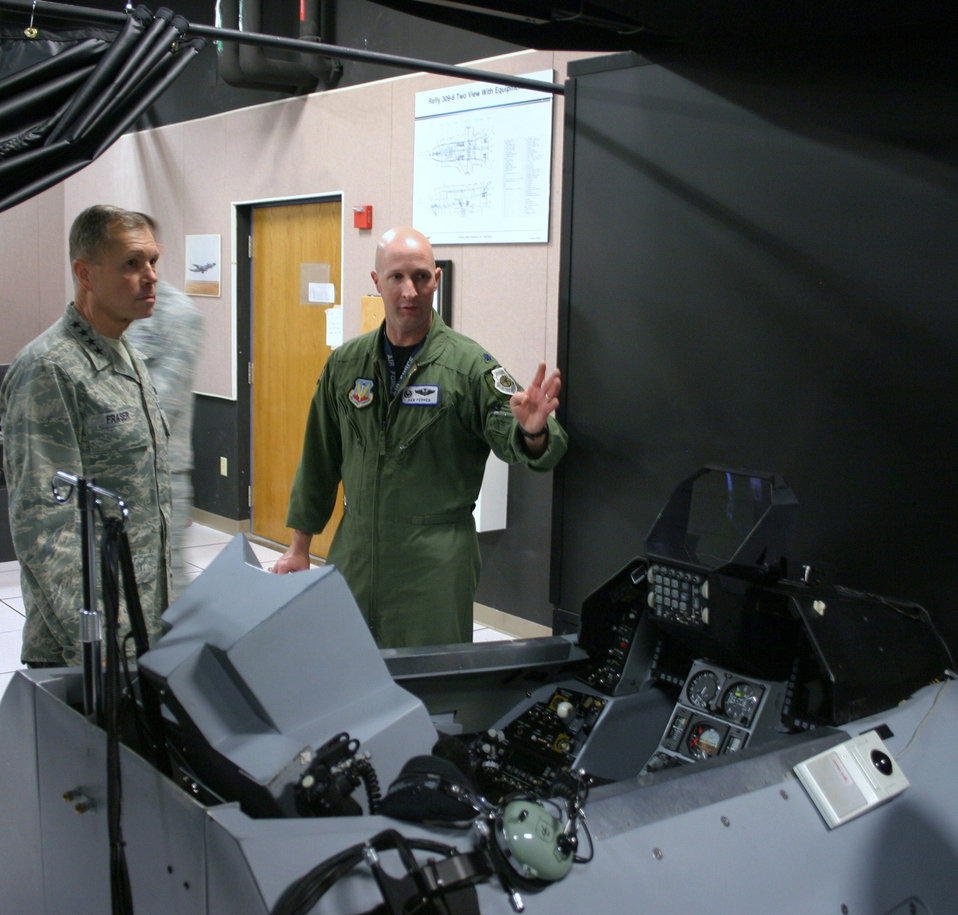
ACC commander visits Kirtland AFB prior to start of virtual exercise

Lt. Col. Daniel Pepper explains to Gen. William M. Fraser III the benefits the Distributed Mission Operations Center provides Dec. 7, 2010, at Kirtland Air Force Base, N.M. General Fraser toured the DMOC prior to the start of Virtual Flag 11-1. The exercises are conducted four times a year, with one dedicated to coalition warfare. Colonel Pepper is the 705th Combat Training Squadron commander and General Fraser III is the Air Combat Command commander.